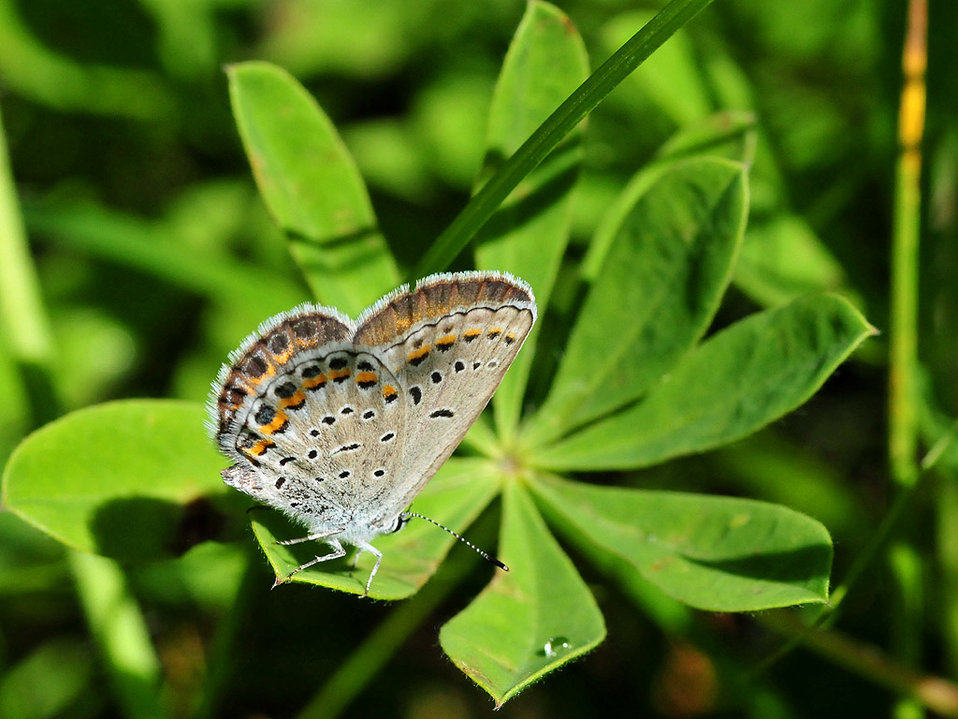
Karner blue butterfly (Lycaeides melissa samuelis)

USFWS Headquarters
Status: Endangered